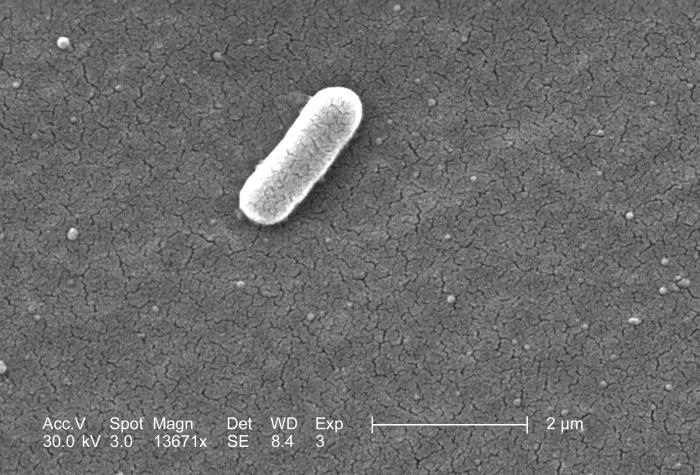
Under a high magnification of 13671x, this scanning electron micrograph (SEM) depicted a single Gram-negative Escherichia coli bacterium of the strain O157:H7, which is one of hundreds of strains of this bacterium. Although most strains are harmless, and live in the intestines of healthy humans and animals, this strain produces a powerful toxin, which can cause severe illness.E. coli O157:H7 was first recognized as a cause of illness in 1982 during an outbreak of severe bloody diarrhea; the outbreak was traced to contaminated hamburgers. Since then, most infections have come from eating undercooked ground beef.The combination of letters and numbers in the name of the bacterium refers to the specific markers found on its surface, which distinguishes it from other types of E. coli. See PHIL 10067 for a colorized version of this image.